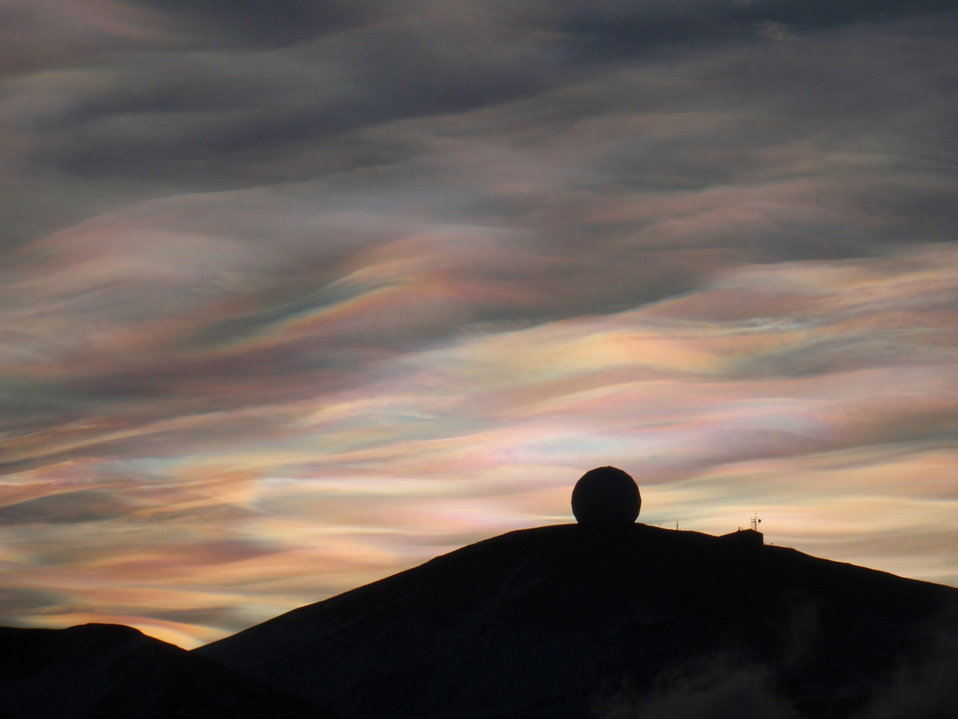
Nacreous clouds at mcmurdo

Nacreous clouds, which only appear in high latitudes at the end of winter, over the nasa radome at mcmurdo station, antarctica.